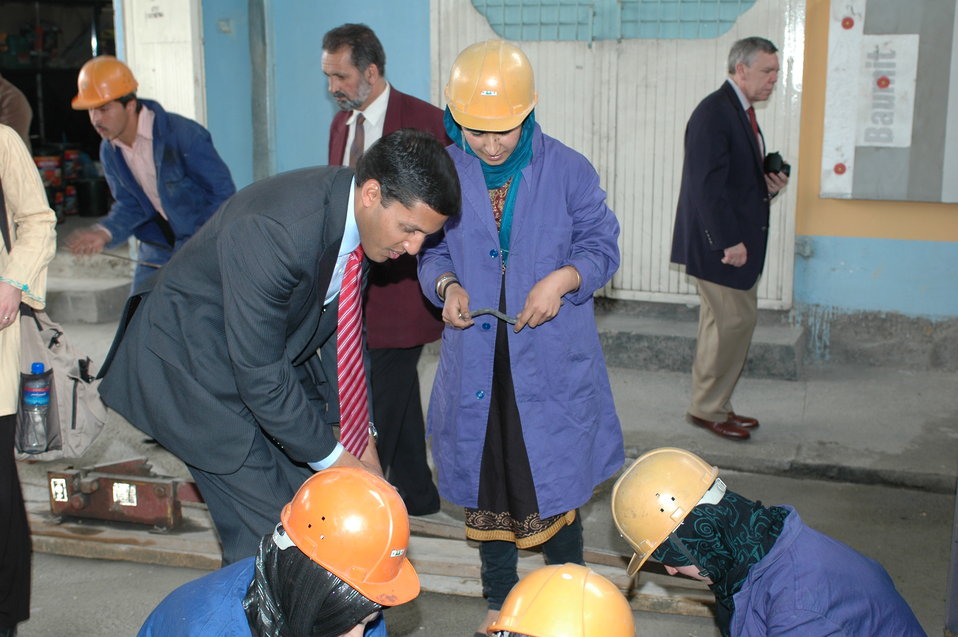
Dr Shah Visits Votech in Kabul